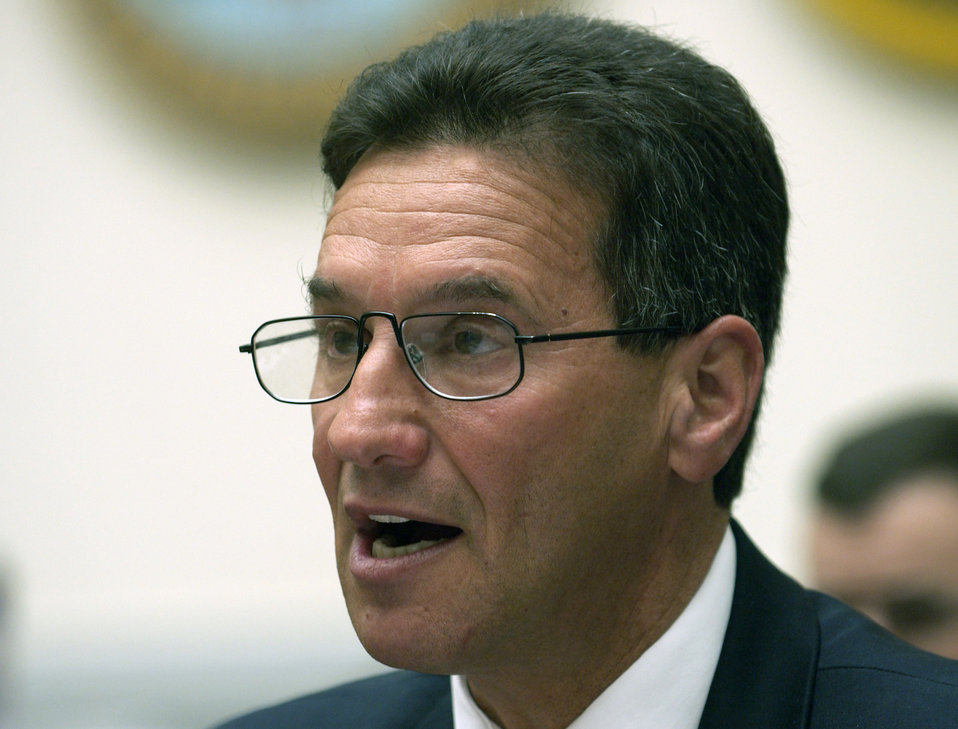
Dr. Sambur announces resignation

WASHINGTON -- Dr. Marvin R. Sambur announced his resignation Nov. 17 as the assistant secretary of the Air Force for acquisition. He is scheduled to depart Jan. 20 or sooner if his successor is confirmed.